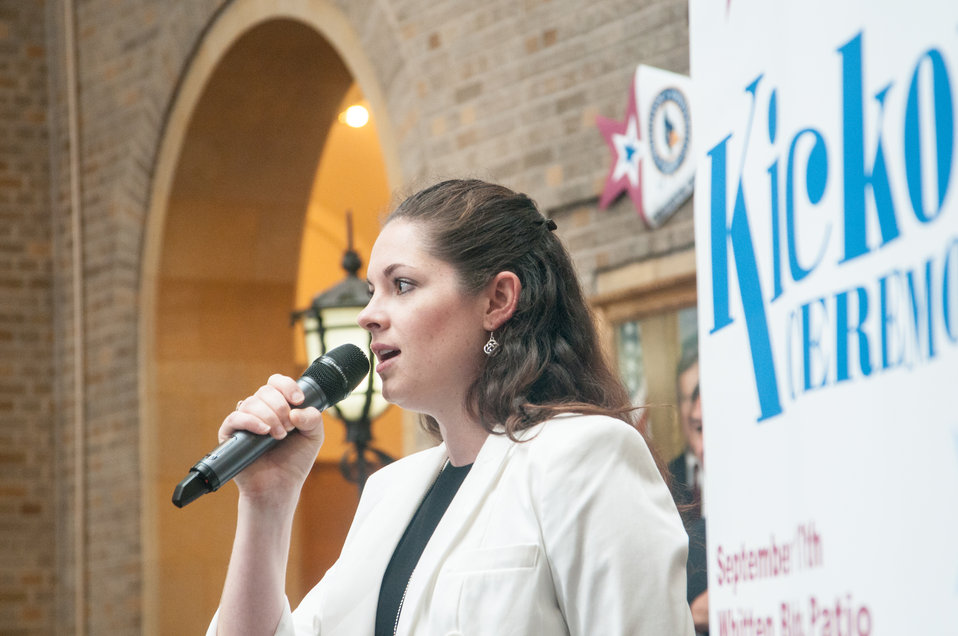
The 2013 Combined Federal Campaign Opening Ceremony and fund raising event on Tuesday, Sept 17, 2013 in the Whitten Building, U.S. Department of Agriculture (USDA), Washington, D.C. Employees took personal time to attend and participate in fund raising activities that generated donations and donation registrations that will help support charities. The Combined Federal Campaign (CFC) is the largest and most successful workplace charitable giving drive in the world. CFC is the only authorized charitable organization solicitation of Federal employees in their workplaces. CFC is structured to support and to promote philanthropy through a voluntary program that is cost-efficient and effective in providing all Federal employees the opportunity to impact the CFC charitable interest of their choosing. For more information about CFC, please see www.usda.gov/wps/portal/usda/usdahome?navid=USDA CFC USDA Photo by Lance Cheung.